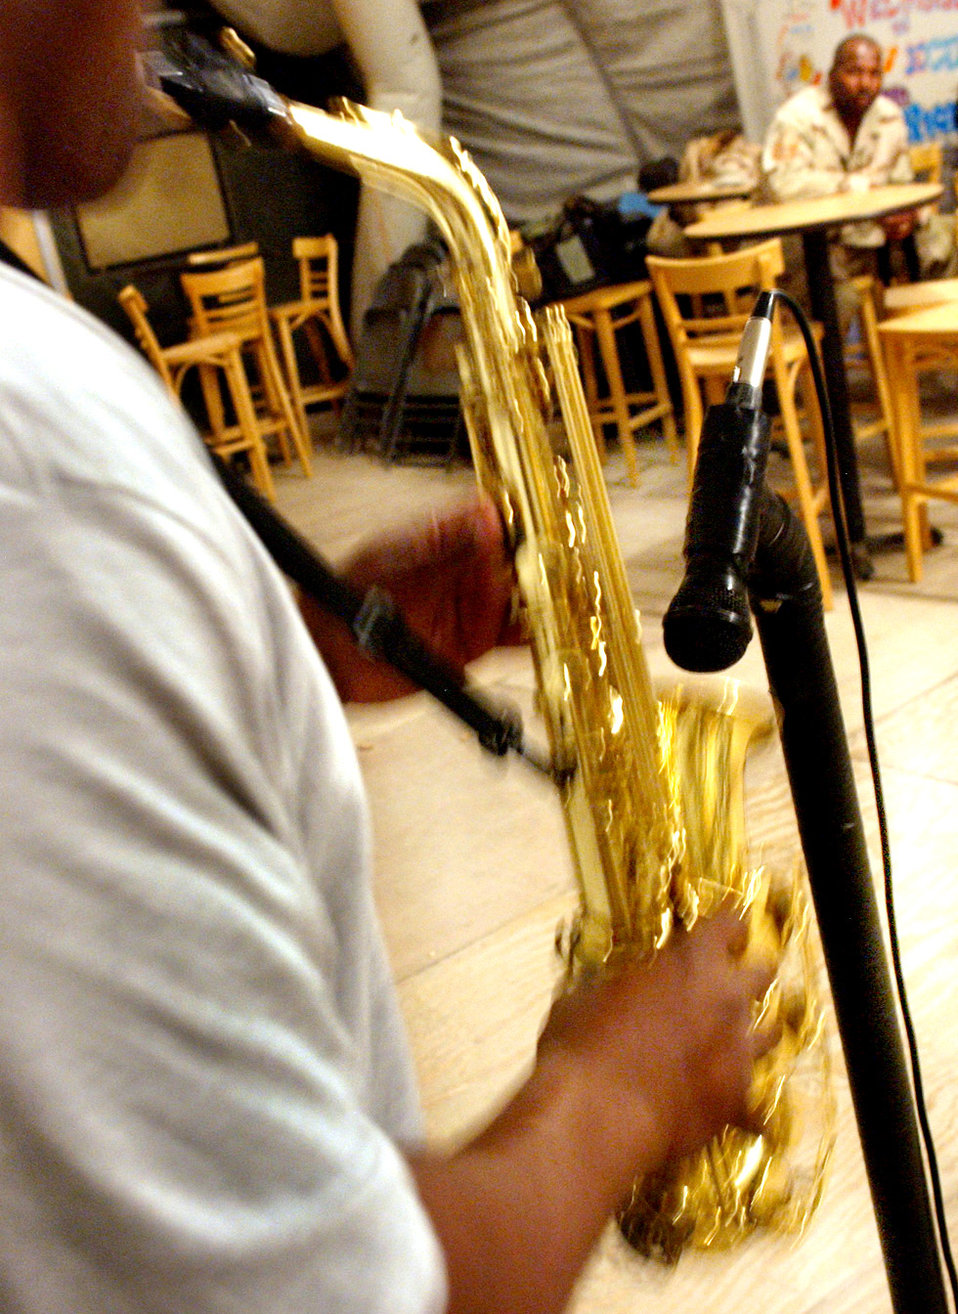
Jazz night in Baghdad be-bops with Airmen's notes

BAGHDAD, Iraq -- Master Sgt. Rosmon Johnson makes his alto saxophone sing for the crowd on jazz night. He is a heating, ventilation and air conditioning craftsman deployed from Scott Air Force Base, Ill.